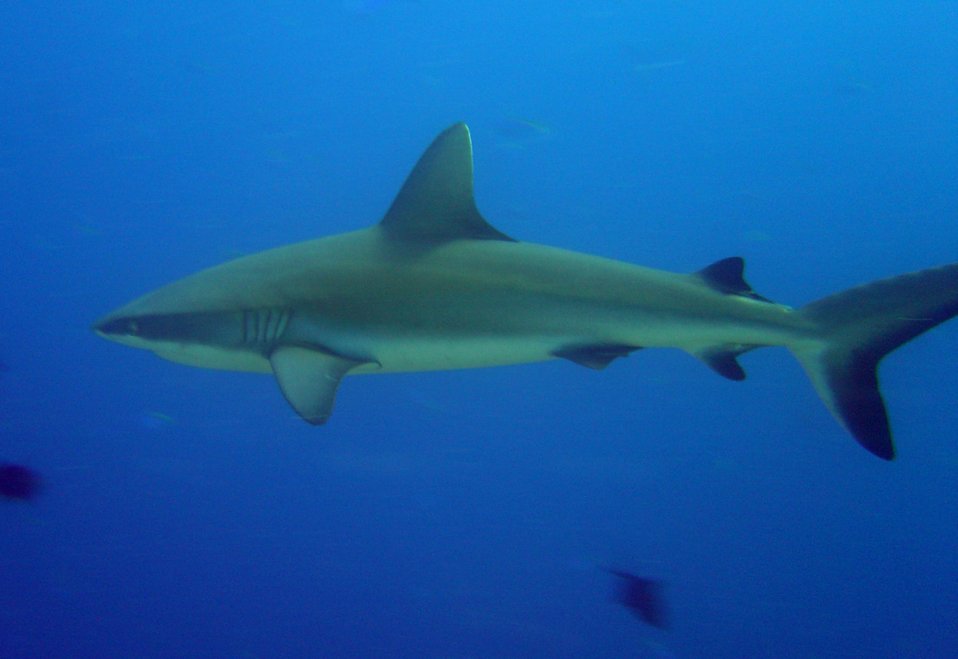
Gray reef shark (Carcharinus amblyrhynchos).